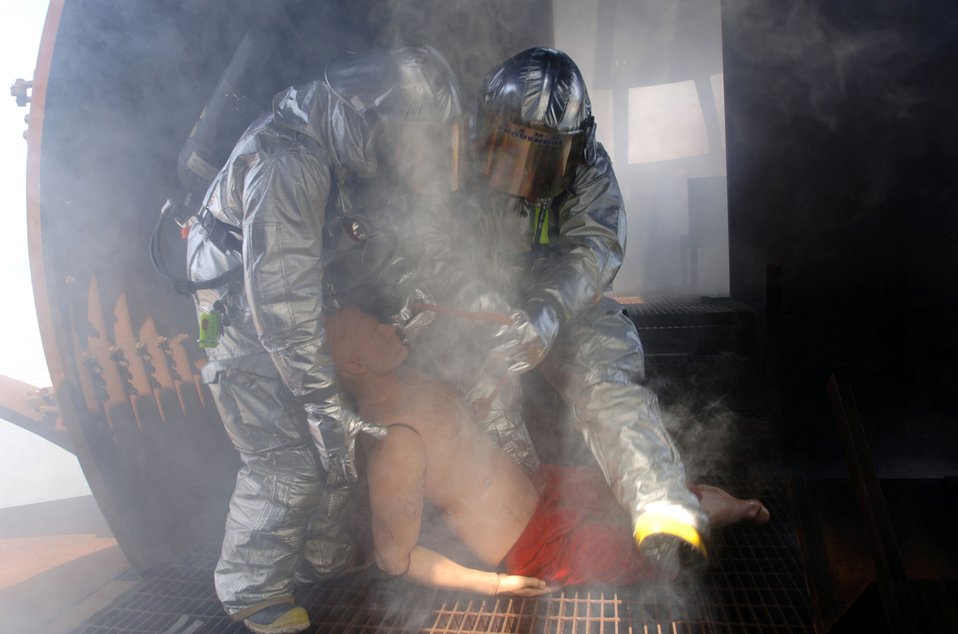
It's hot inside

YOKOTA AIR BASE, Japan -- Firefighters with the 374th Civil Engineer Squadron evacuate a